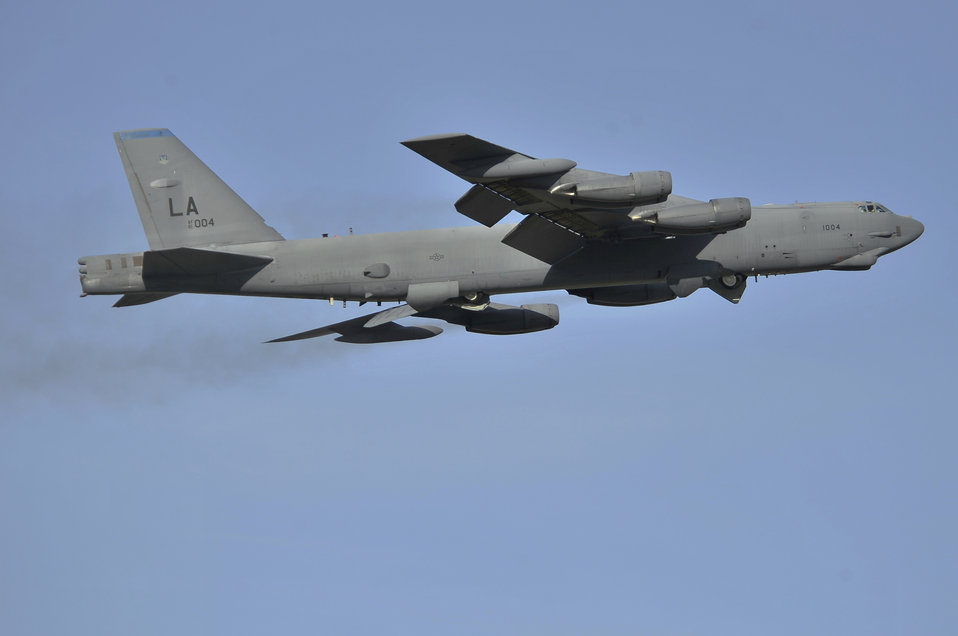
Bomber deterrence

A B-52H Stratofortress takes off from Eielson Air Force Base, Alaska, June 23 during Northern Edge 2009. The exercise is one in a series of U.S. Pacific Command exercises that prepare joint forces to respond to crises in the region. The B-52 is assigned to Barksdale AFB, La.